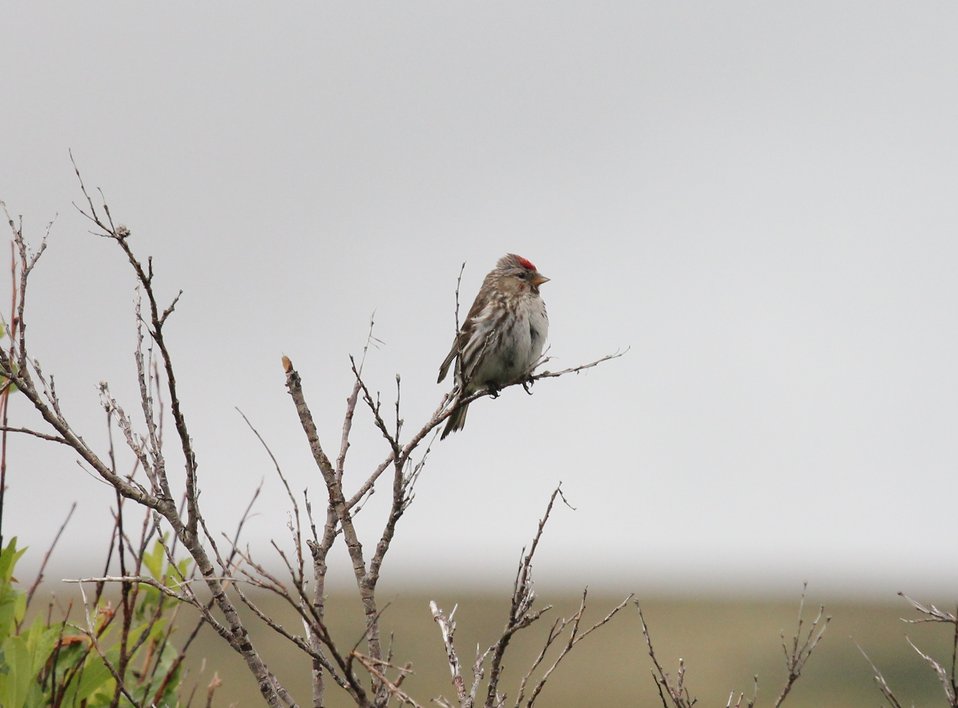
Redpoll

Andreafsky wilderness, Yukon Delta National Wildlife Refuge